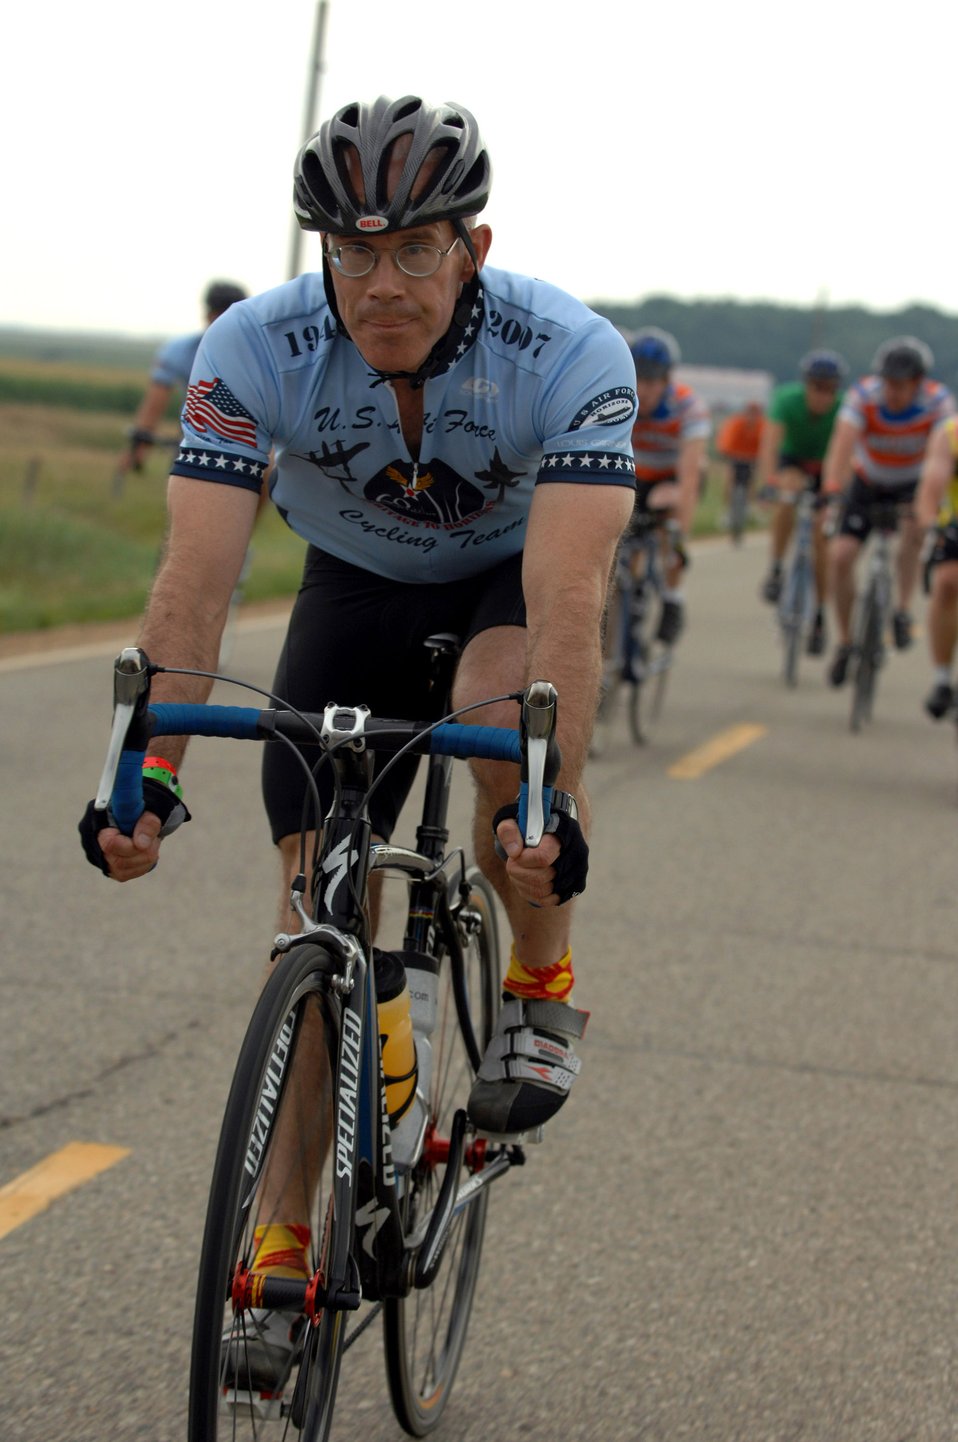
Airmen cycle across Iowa

A member of the U.S. Air Force Cycling Team rides his bicycle from Spencer to Humboldt, Iowa, along with other participants July 23 during the third day of the Register's Annual Great Bike Ride Across Iowa, known as RAGBRAI, a cycling event sponsored by the Des Moines Register newspaper. This is the 13th year the Air Force Cycling Team has participated in the RAGBRAI to support Air Force recruiting.